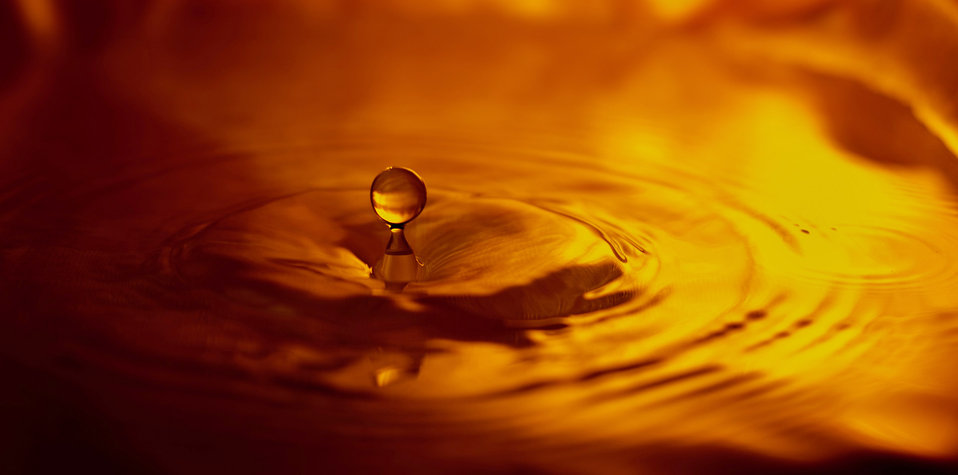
The impact of drops - detail

The impact of drops.